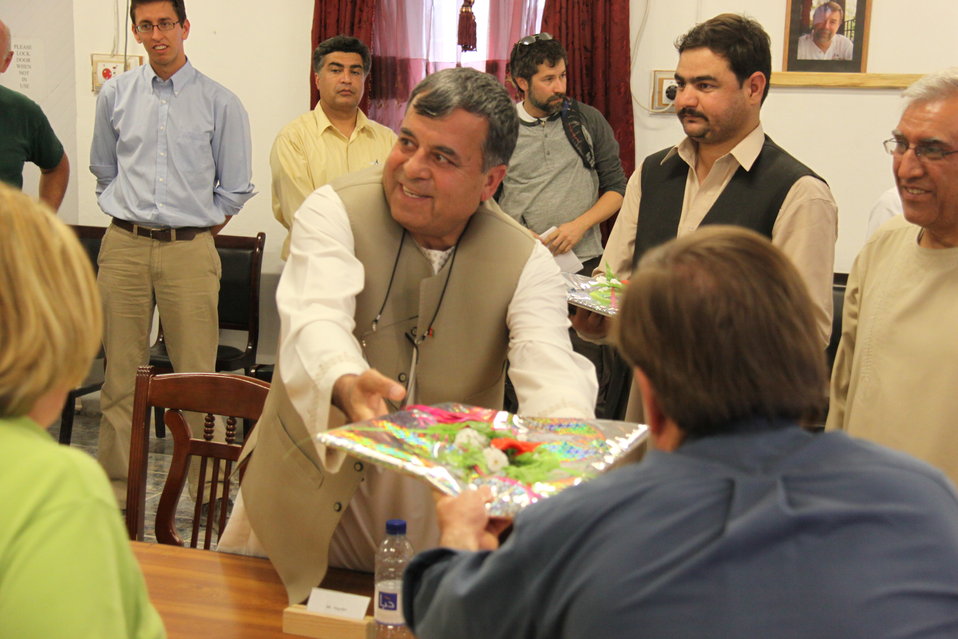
Meeting with Local Leaders in Kandahar